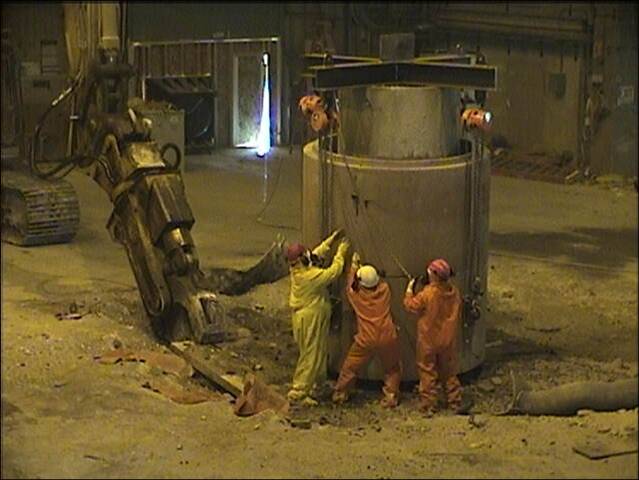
Idaho Site Tackles Recovery Act Work to Help Protect Aquifer, Meet State Requirements

Workers install high-density concrete culverts to increase shielding around the Materials Test Reactor at the Reactor Technology Complex.